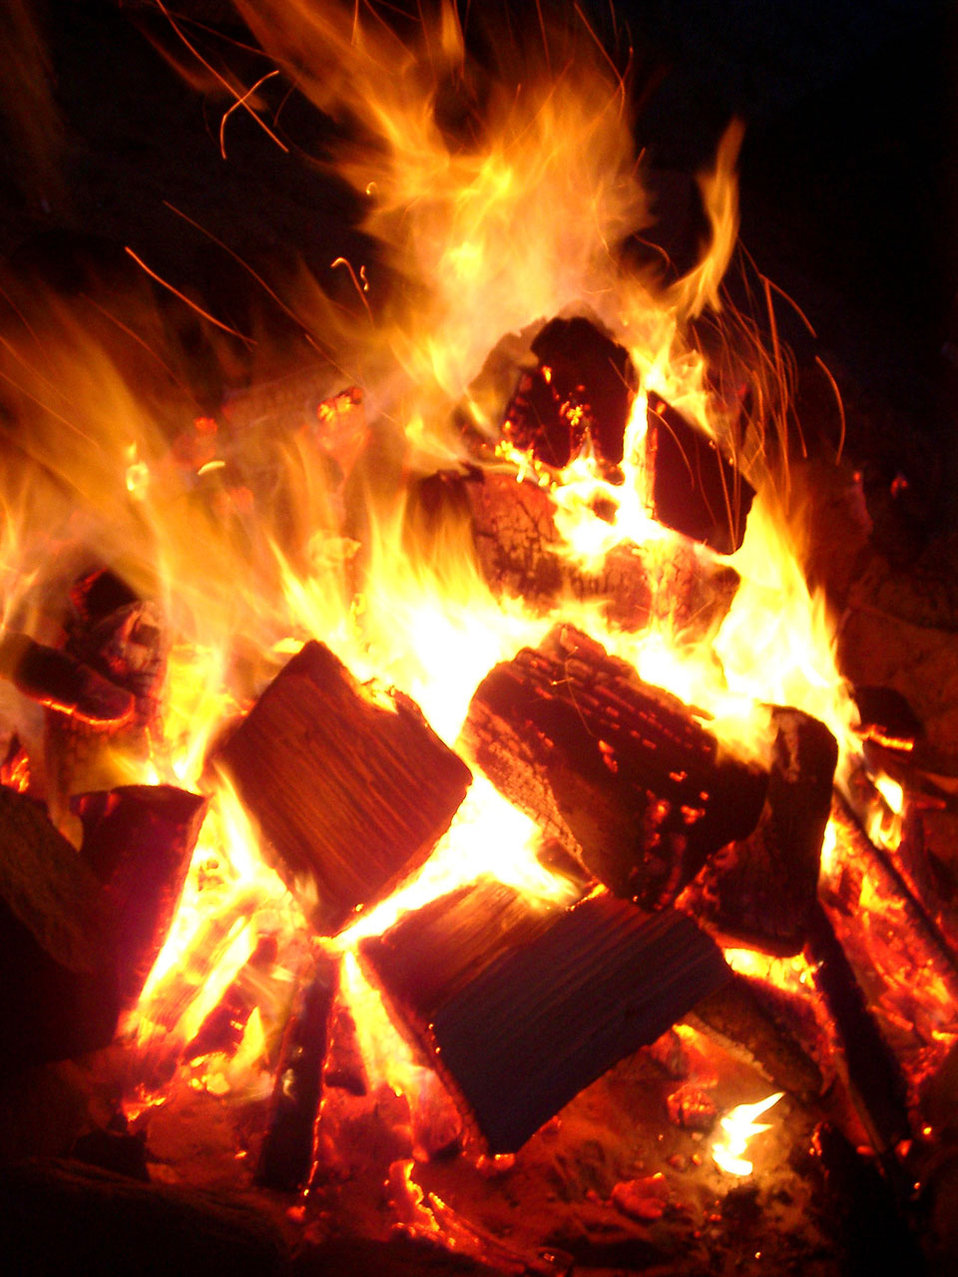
Fire flames

Flames and red hot burning coals.